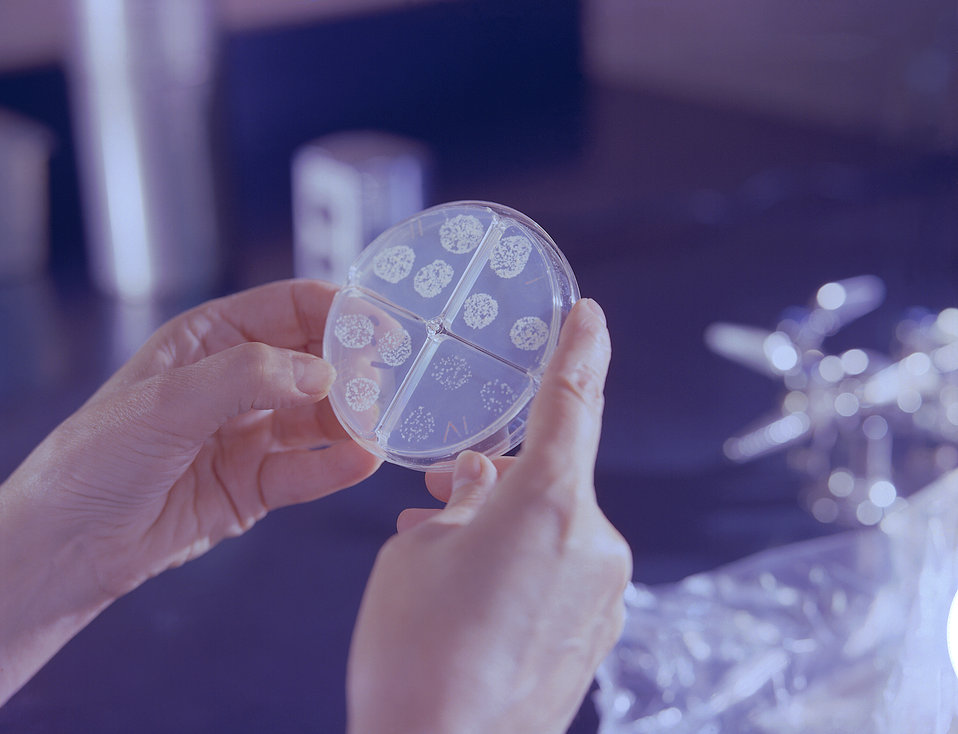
This historic 1963 photograph depicted a laboratorian performing an examination of an agar culture Petri dish, known as a Felsen Quadrant Culture Plate, as part of a tuberculosis drug susceptibility test.